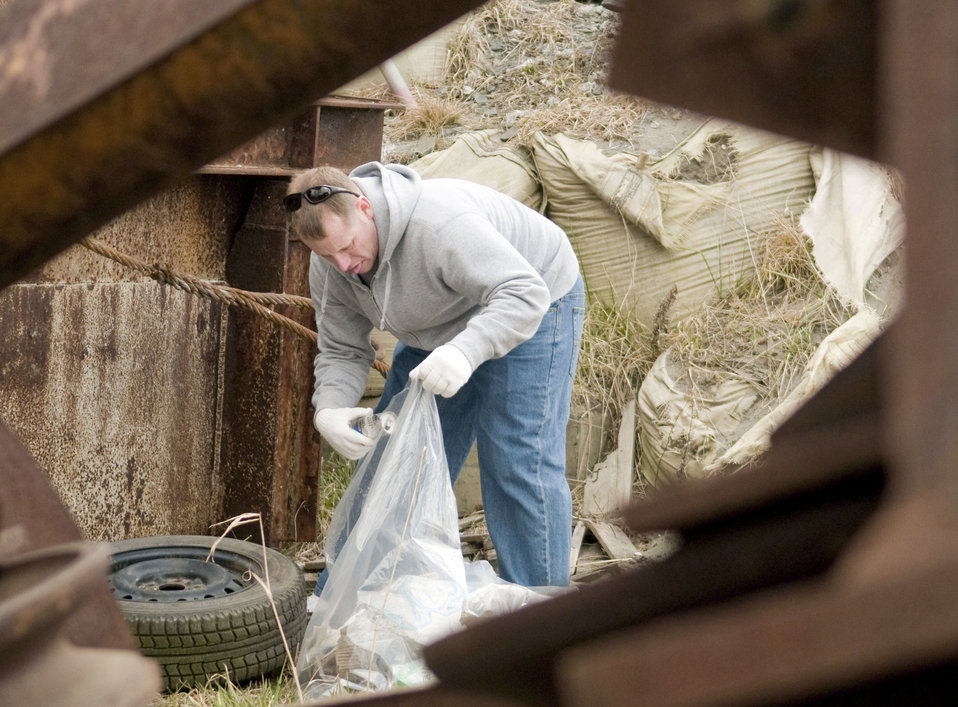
Misawa servicemembers, Japanese clean beach, port

Master Sgt. Brian Spalding loads trash into a plastic bag during the 13th Annual Misawa port and beach cleanup at Misawa Air Base, Japan, April 10, 2010. Sergeant Spalding is assigned to the 35th Fighter Wing Flight Safety office.